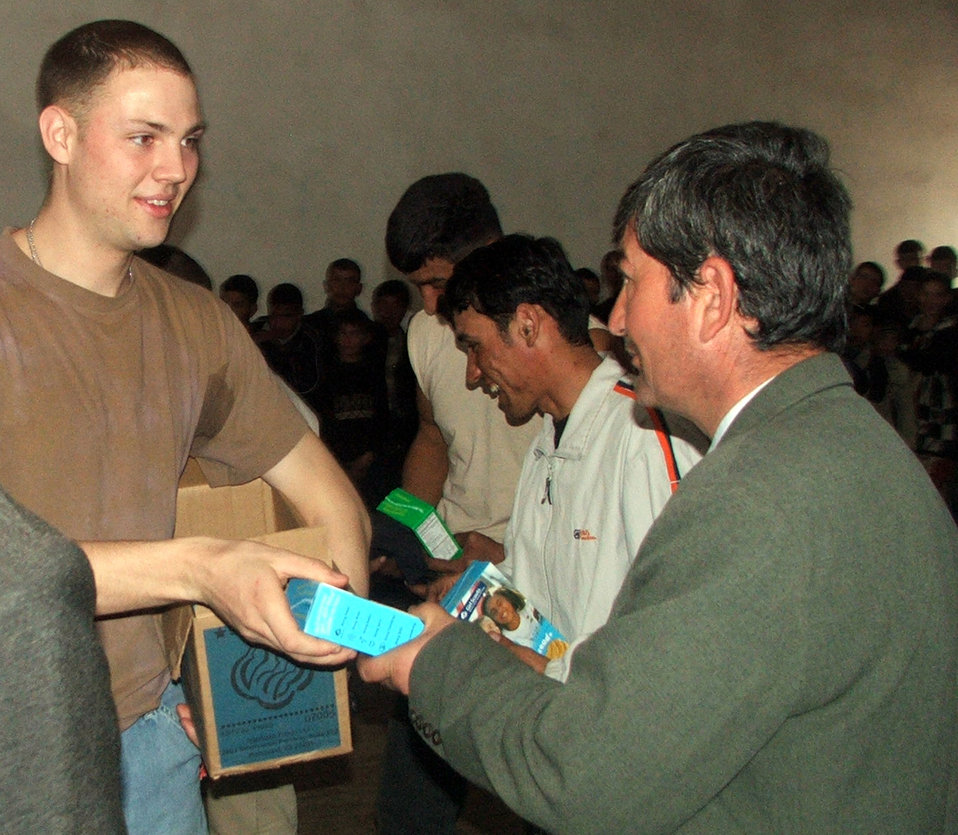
Airmen connect with Uzbeks through donations, volleyball

KHANABAD, Uzbekistan -- Senior Airman Jason Yarborough hands a box of cookies to an Uzbek man during a humanitarian aid visit here March 3. A group of Airmen and Soldiers from nearby Karshi-Khanabad Air Base visited the village medical clinic and the school where they played a volleyball game and handed out donations.